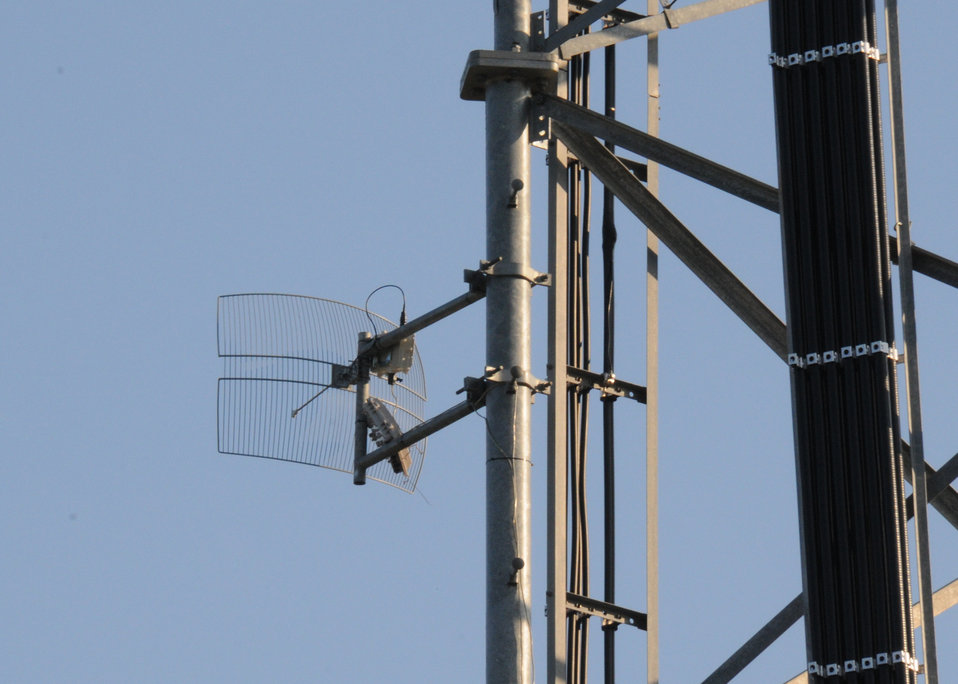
A new cell tower in Medicine Park, Oklahoma.